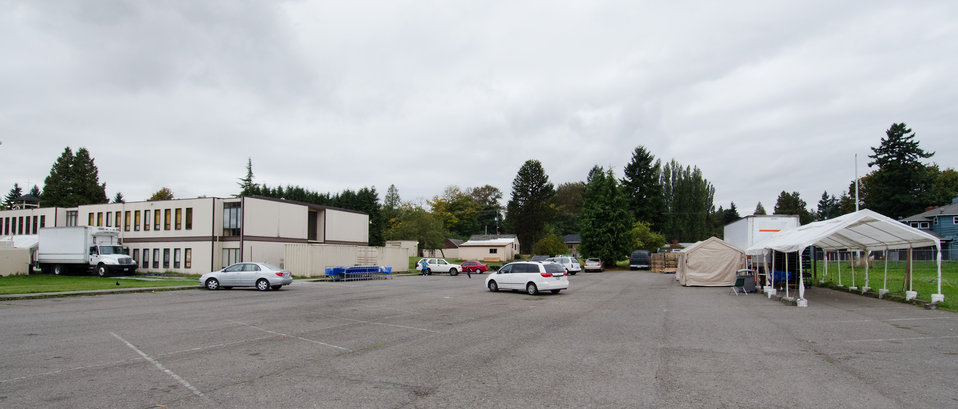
Tukwila Pantry operates out of the first floor wing at the Riverton Park United Methodist Church, Tukwila. WA, on Thursday, October 20, 2011. The pantry provides monthly food bank services to individuals and families in cities of Tukwila, SeaTac, Burien and the Boulevard Park community. Congregate meal service is held each Tuesday at the church. The pantry's weekly Tuesday’s Table provides 150 hot meals to seniors, low-income families, homeless individuals and those in transition. Additionally, emergency referral services are provided to assist individuals connecting with agencies that can address their needs. Executive Director Joe Tice grew up in Tukwila and feels compelled to give back to economically challenged community of 25,000 families in 3,000 households. “Since the pantry’s founding in 2000, census figures show poverty has risen 300%,” said Joe Tice. “85-95% of elementary school children are enrolled in SNAP (U.S. Department of Agriculture Supplemental Nutrition Assistance Program).” At the pantry’s height, it delivered 3.8 million pounds of food (2009), but with the economic downturn Tice projects 2011 deliveries to total 2.6 million pounds. Tice considers Tukwila Pantry as one of the smaller distribution points in the greater Seattle area.

Some canned and dry goods are provided by The Emergency Food Assistance Program (TEFAP) a Federal program that helps supplement the diets of low-income needy persons, including the elderly, by providing them with emergency food and nutrition assistance. A significant amount of the pantry’s food comes through Northwest Harvest, Washington's only nonprofit statewide food bank distributor; and Food Lifeline, the largest nonprofit food distributor in the state who solicit, receive, and distribute over 24 million meals of food to nearly 700,000 people through our network of 300 food banks (such as Tukwila Pantry), shelters and meal programs.